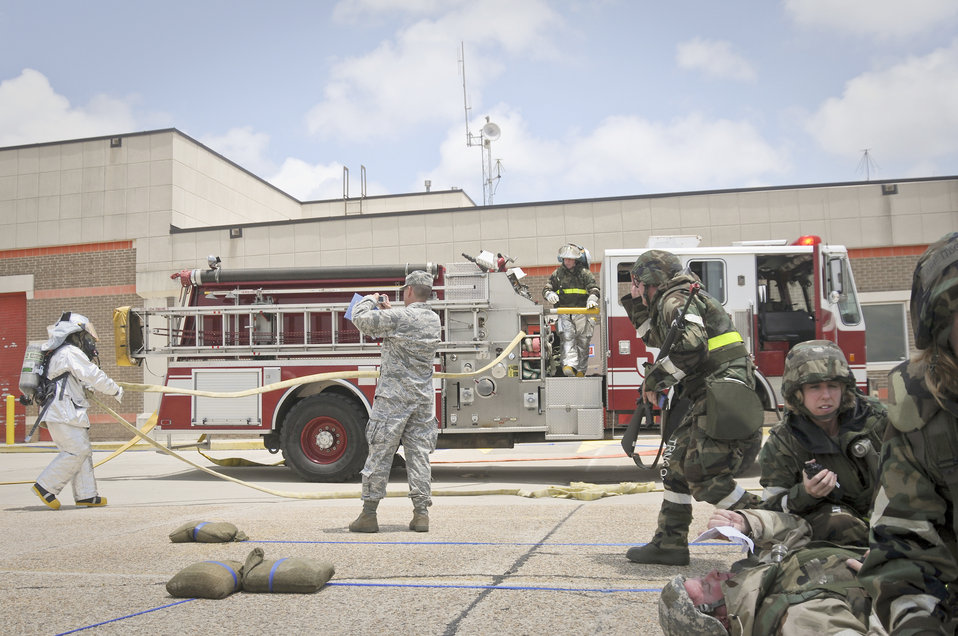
Homeland defense exercise

Members of the 123rd Airlift Wing fire department respond to a simulated fire during an operational readiness inspection May 20, 2010, at the Gulfport Combat Readiness Training Center in Gulfport, Miss.